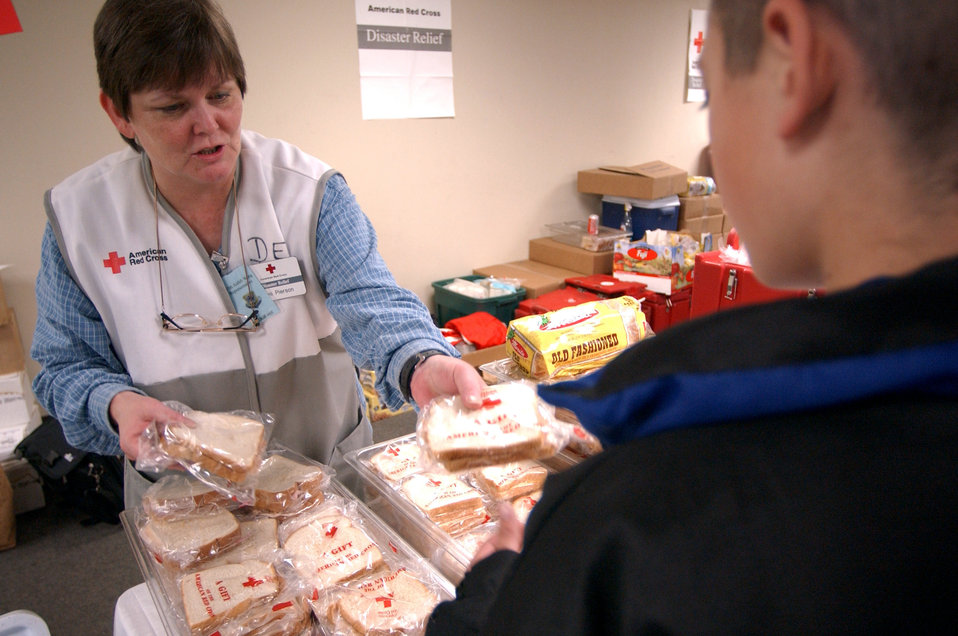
Red Cross worker

CHARLESTON AIR FORCE BASE, S.C. -- An American Red Cross Disaster Relief worker provides a sandwich to a former resident of Incirlik Air Base, Turkey. More than 1,300 Air Force family members and nonmission-essential civilian employees from the base arrived at Charleston International Airport, S.C., on March 21.